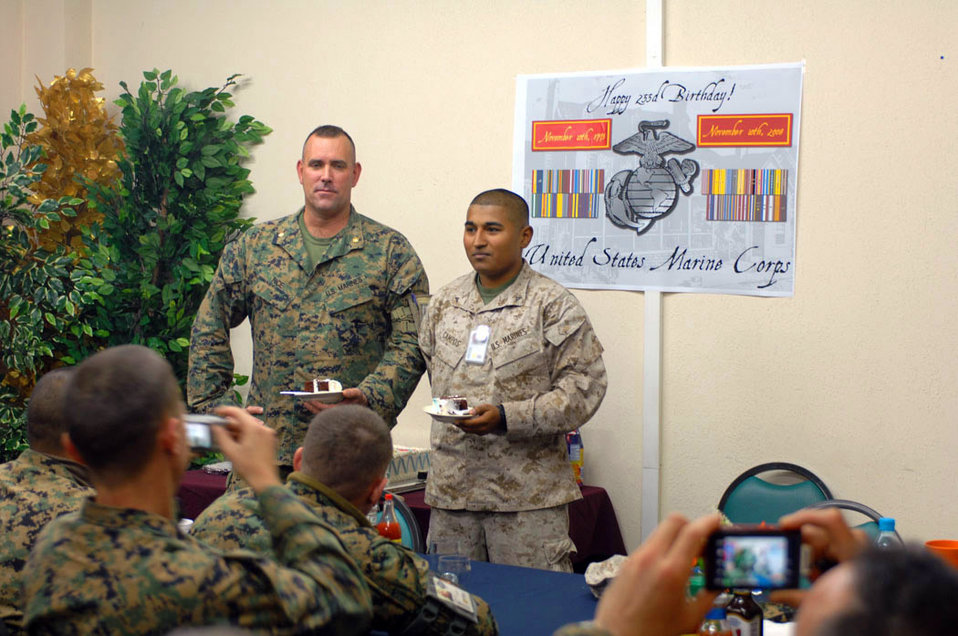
Marines celebrate Marine Corps' 233rd birthday at Manas

Marines Lance Cpl. German Gamez Campos and Maj. Jay Rice cut and pass out the first pieces of the birthday cake in celebration of the Marine Corps' 233rd birthday at Manas Air Base, Kyrgyzstan, Nov. 10. The group of 30 Marines deployed from the 3rd Marine Division, Okinawa, are en route to support Operation Enduring Freedom.